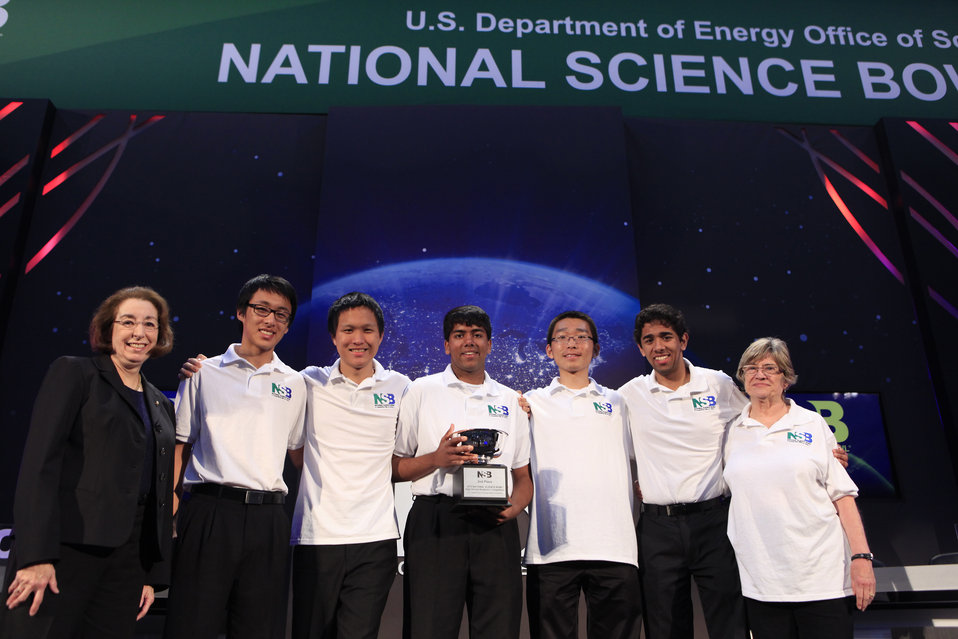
Students from North Carolina High School of Science and Mathematics from Durham, NC won second place in the 2013 National Science Bowl in Washington, DC.

The Department of Energy created the National Science Bowl in 1991 to encourage students to excel in mathematics and science and to pursue careers in these fields.